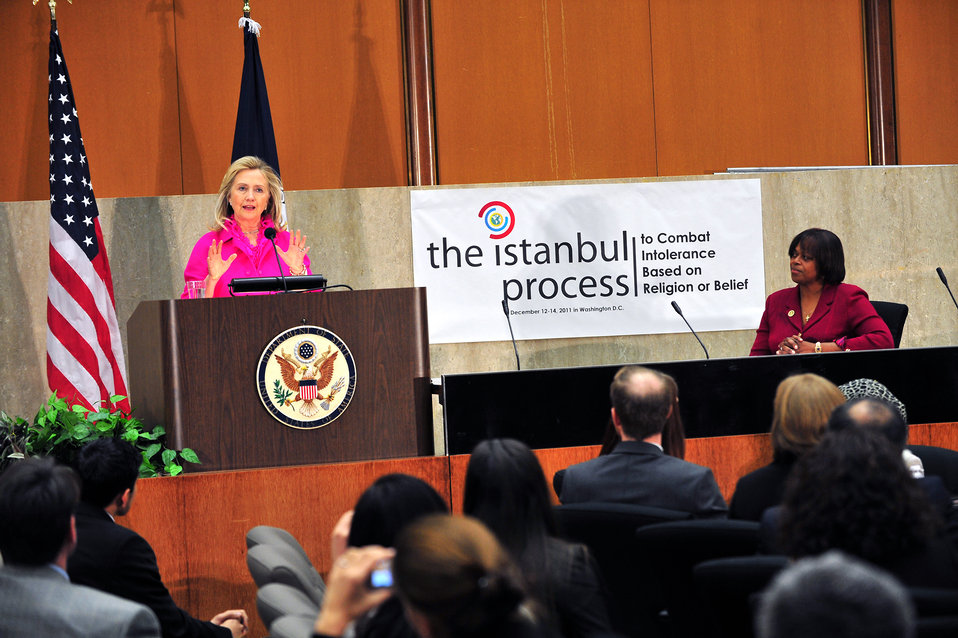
Secretary Clinton Address Istanbul Process for Combating Intolerance and Discrimination Based on Religion or Belief

U.S. Secretary of State Hillary Rodham Clinton addresses the Istanbul Process for Combating Intolerance and Discrimination Based on Religion or Belief, at the U.S. Department of State in Washington, D.C., on December 14, 2011.